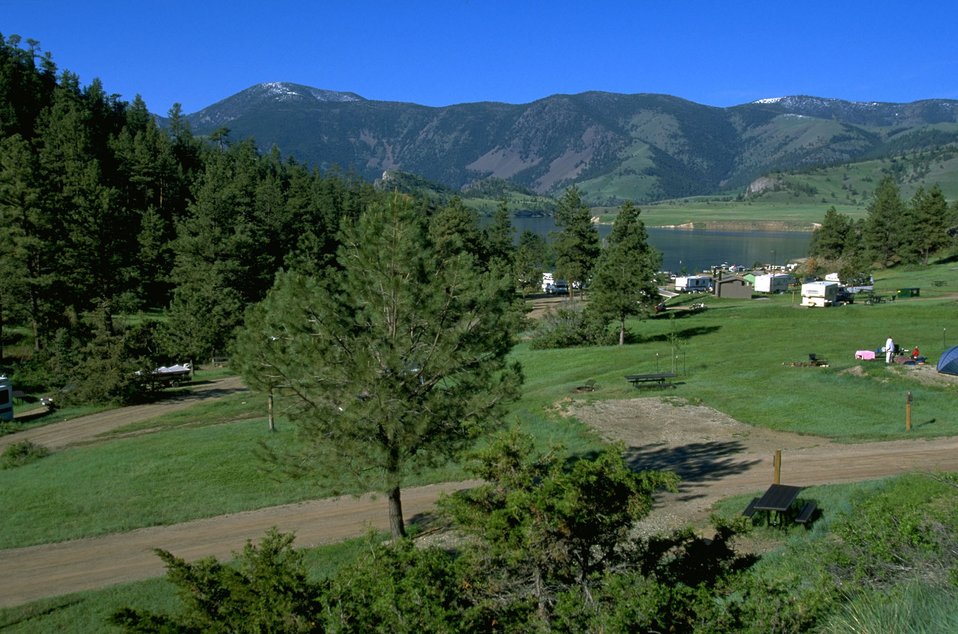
View of Holter Lake and Log Gulch Campground from the hillside